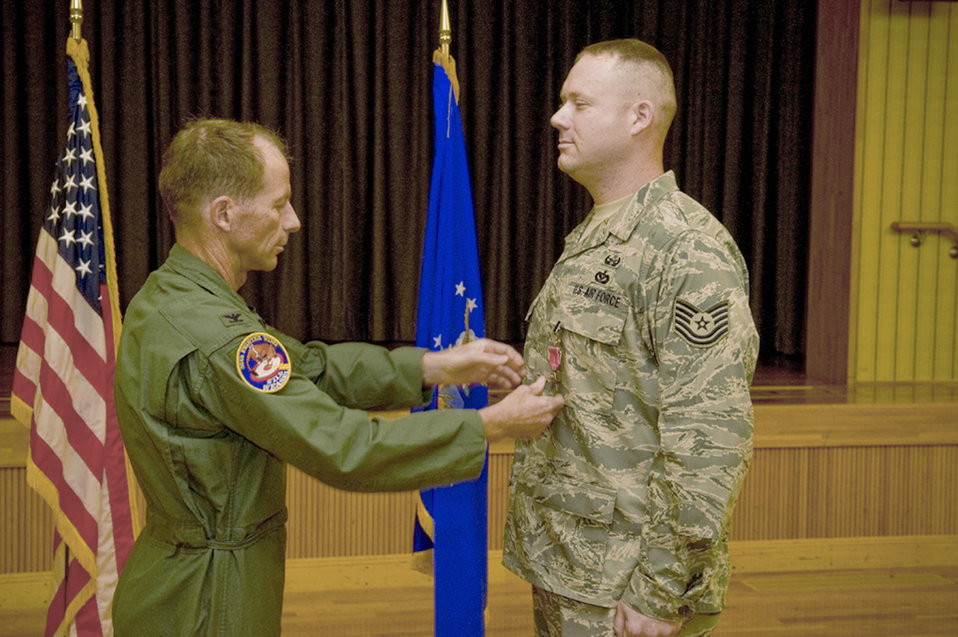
Blast radius: An EOD Airman's experience

Tech. Sgt. Rory Stark receives a Bronze Star medal from Col. David Stilwell July 2, 2010 at Misawa Air Base, Japan, for his actions in Afghanistan. Sergeant Stark is an explosive ordnance disposal technician assigned to the 35th Civil Engineer Squadron and Colonel Stilwell is the 35th Fighter Wing commander.